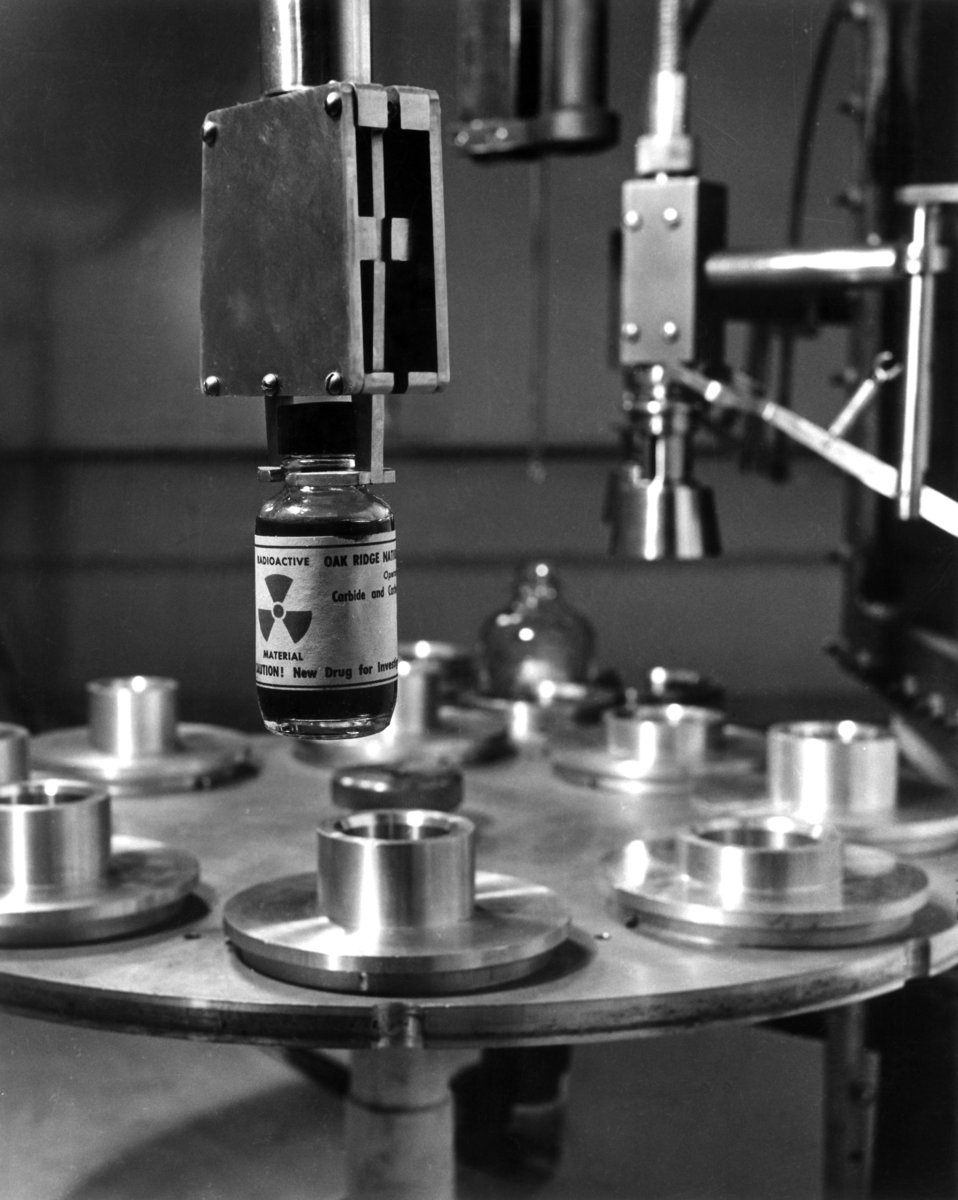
Shipping Bottle Radioactive Isotopes ORNL

5786-12-3 DOE photo Ed Westcott